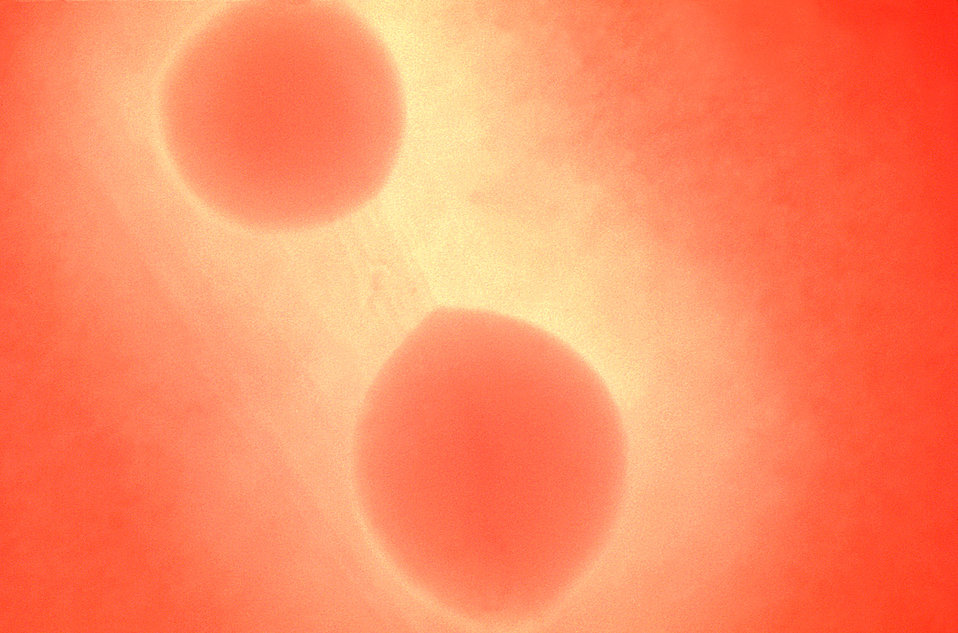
Magnified 100x, this 1977 photograph depicted a Petri dish filled with trypticase soy agar medium containing 5% defibrinated sheep's blood, i.e., blood agar plate (BAP). After having been inoculated by streaking the surface of the BAP with Group A Streptococcus pyogenes (GAS) bacteria, the dish was incubated in a carbon dioxide enriched atmosphere at 35oC for 24 hours. The culture grew bacterial surface colonies. The characteristic color changes, i.e., a colorless region surrounding each colony in which the red blood cells in the blood agar medium had been destroyed, or "hemolyzed", indicated that these bacteria were indeed beta-hemolytic in nature.Infection with GAS can result in a range of symptoms:- No illness- Mild illness (strep throat or a skin infection such as impetigo)- Severe illness (necrotizing faciitis, streptococcal toxic shock syndrome)